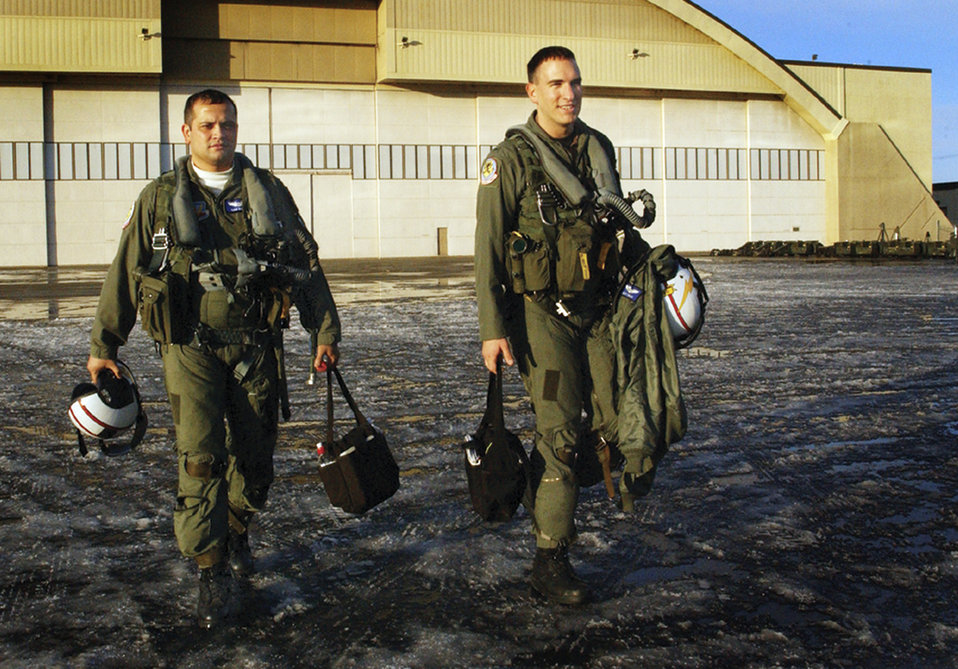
Cope Thunder 06-1

EIELSON AIR FORCE BASE, Alaska -- Electronic counter-measure officers Capt. Sam Hilyer (left) and 1st Lt Matt Polus walk from the